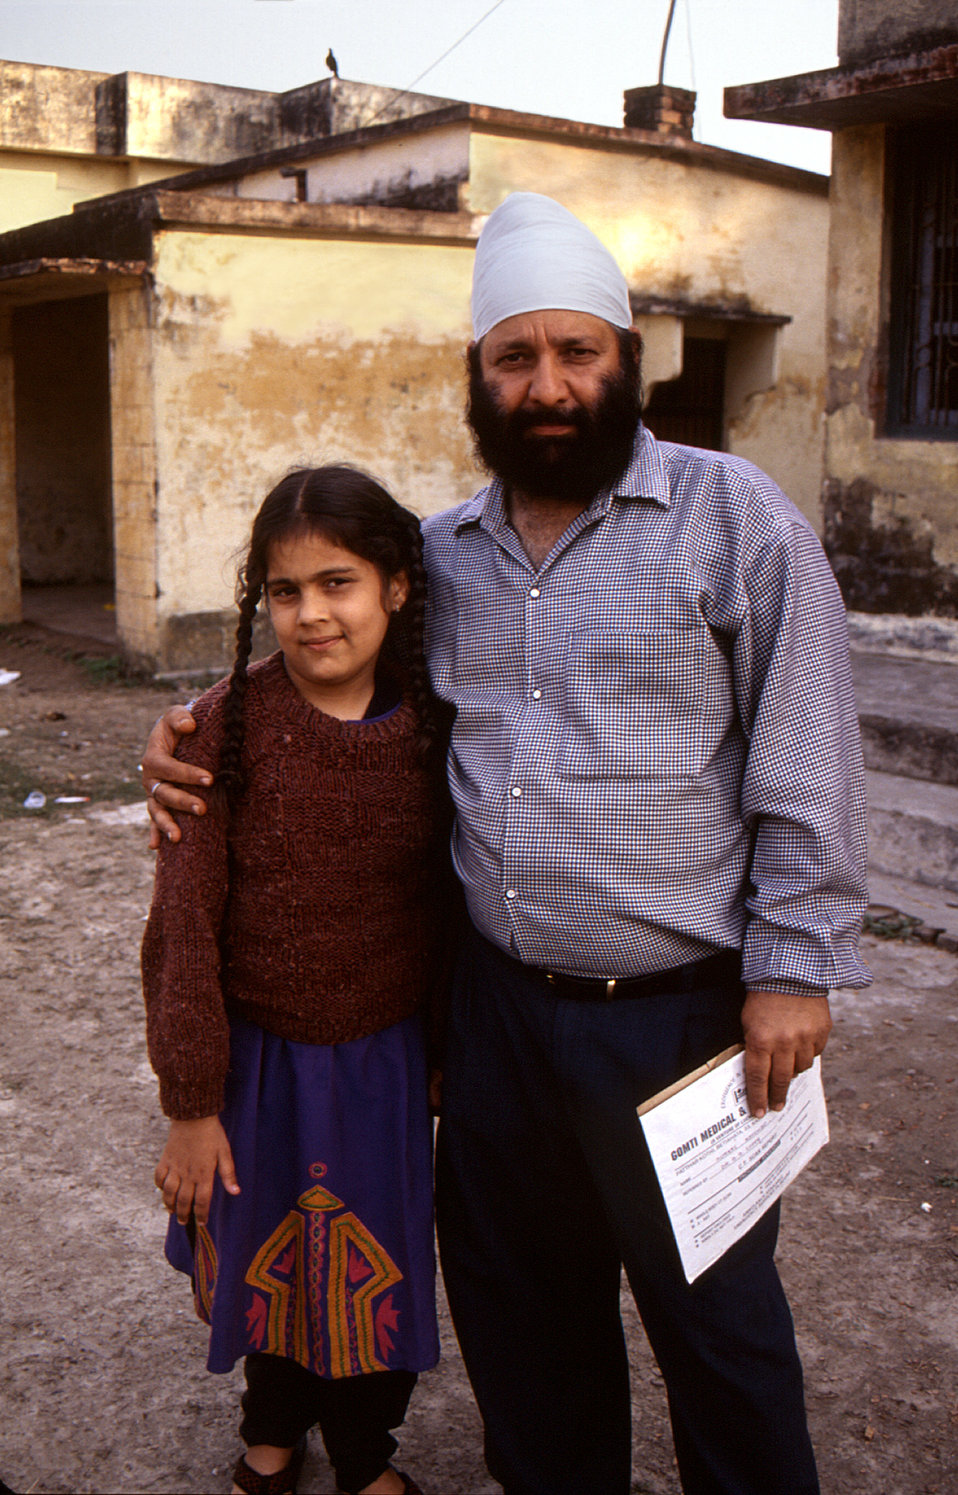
This 2000 photograph depicted a girl who'd been suspected of suffering from acute flaccid paralysis (AFP), which turned out to be Guillain-Barre Syndrome rather than polio. The photo, taken following her recovery, showed her standing outside in her home village with her father. The image was provided by Chris Zahniser, B.S.N., R.N., M.P.H., a STOP Transmission of Polio (STOP) immunization initiative team member and photographer. Ms. Zahniser was at the time assigned to the state of Uttar Pradesh in northern India, and spent three months working in the Districts of Gorakhpur and Deoria.